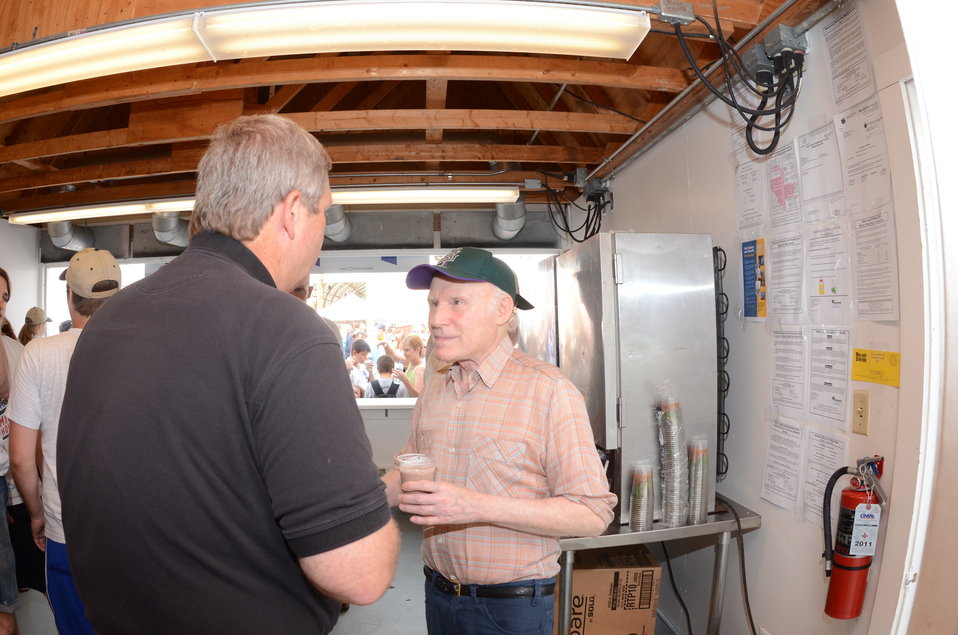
Wisconsin Senator Herb Kohl (left) and Agriculture Secretary Tom Vilsack aat the Wisconsin State Fair in West Allis, WI, on Thursday, August 4, 2011, USDA Photo by Lance Cheung.